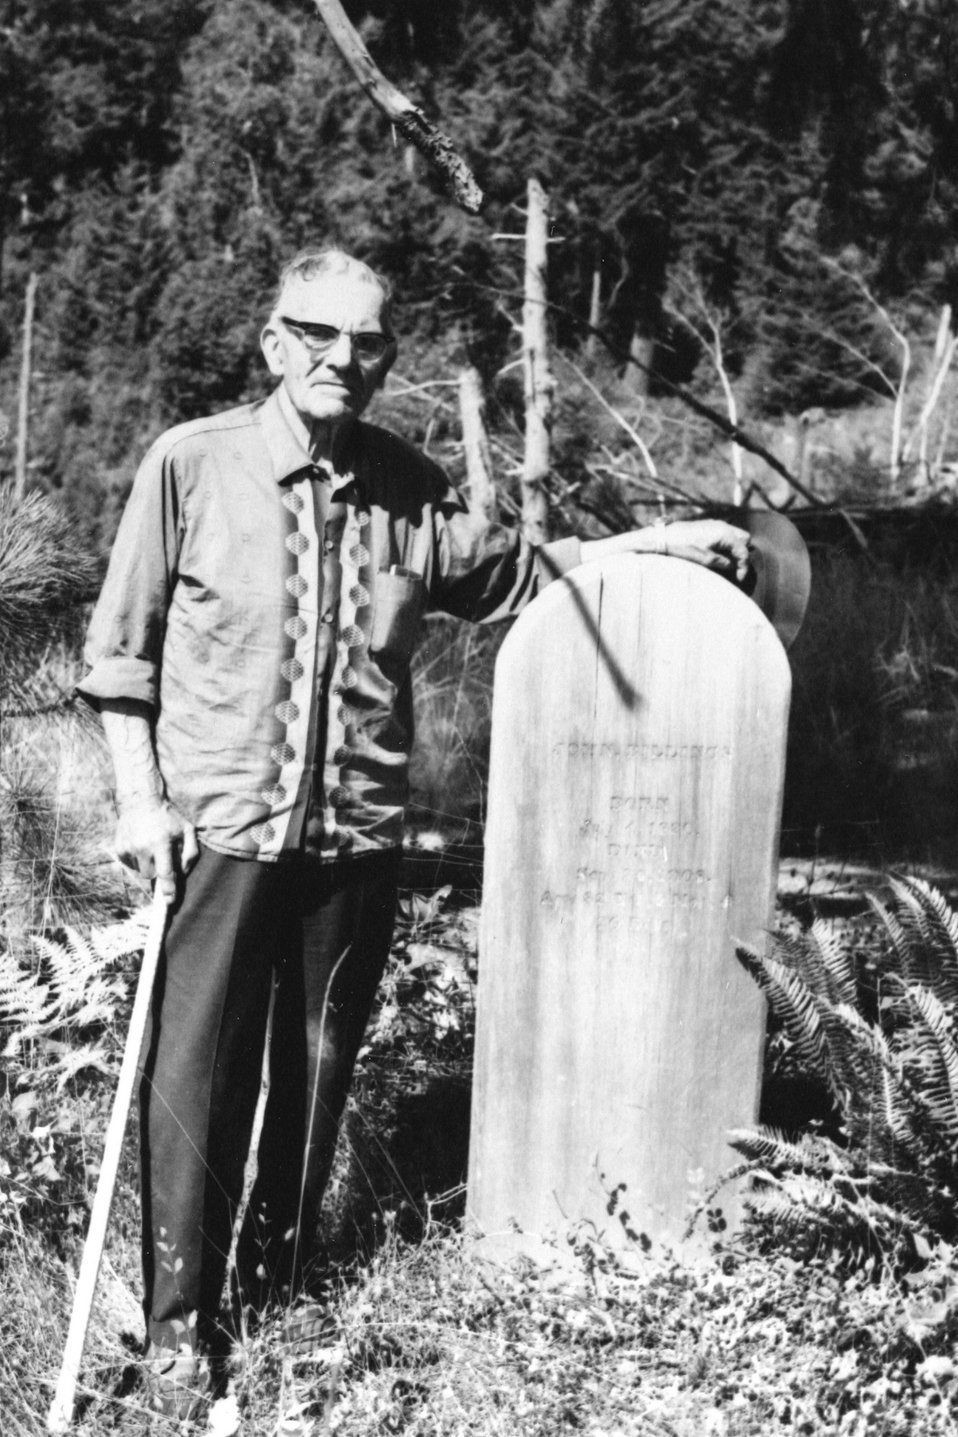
Ivin Billings C. 1977